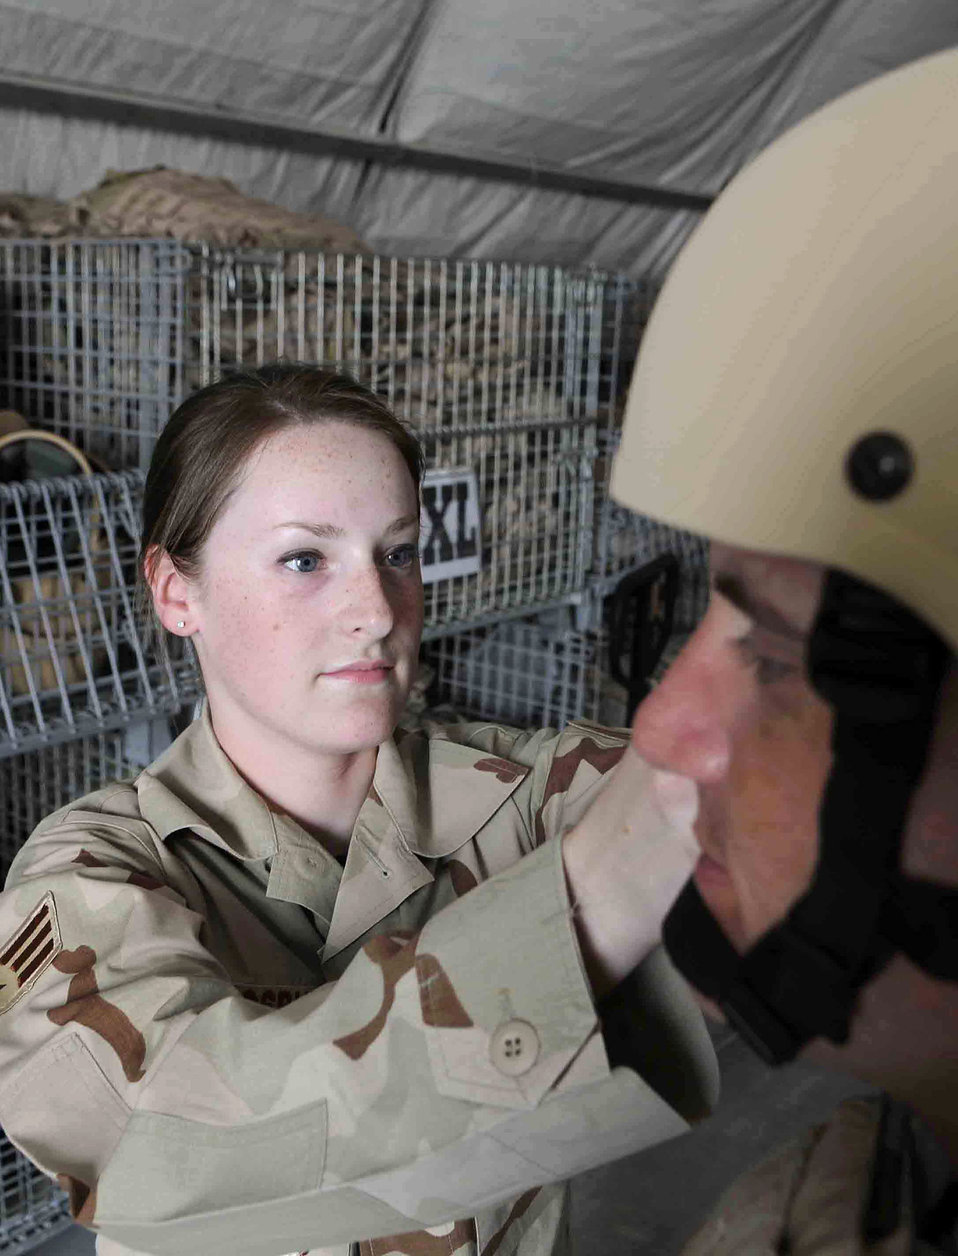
Distrution center saves lives, makes travel easier

Senior Airman Suzanne Kingsbury adjusts an Airman's chin strap April 29 at a Southwest Asia air base. Airman Kingsbury, assigned to the 379th Expeditionary Logistics Readiness Squadron, ensures all protective equipment is properly fitted before Airmen forward deploy.